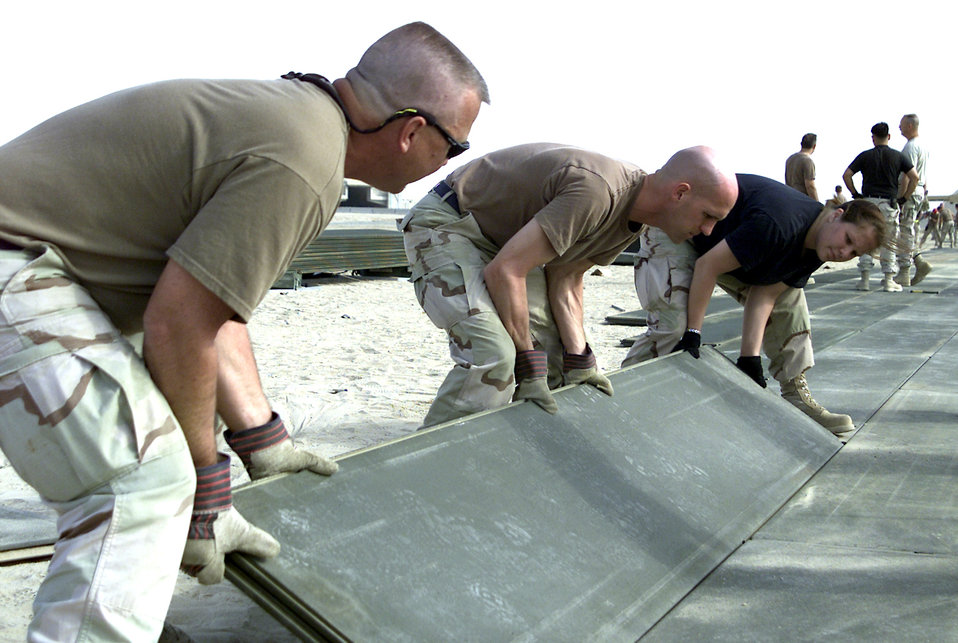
Making upgrades

SOUTHWEST ASIA -- Airmen from the 386th Air Expeditionary Wing install planks for the new 320,000-square-foot C-130 Hercules parking ramp. The planks were made out of interlocking aluminum matting.